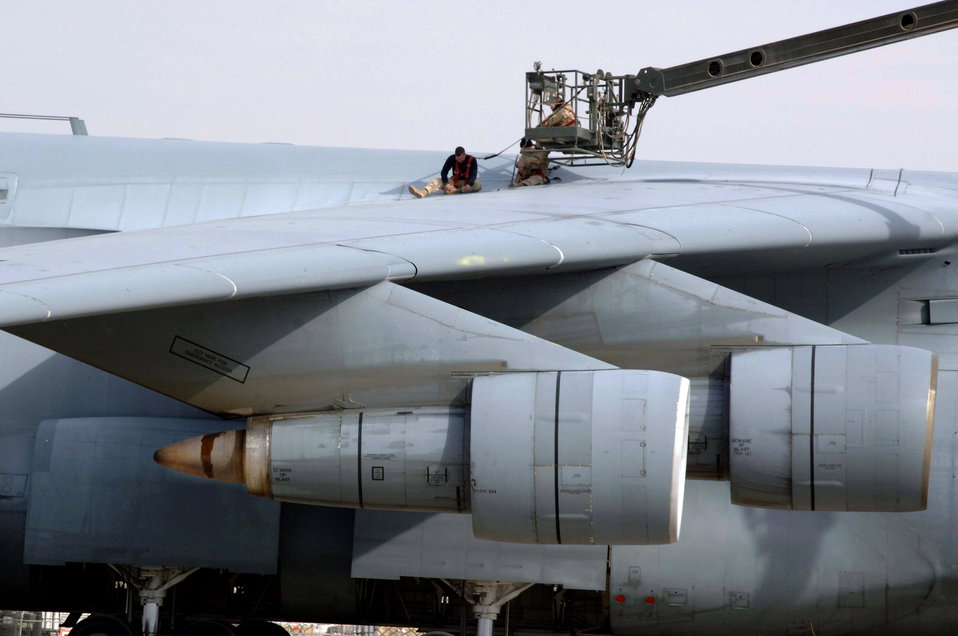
Time to get to work

Maintainers with the 721st Air Mobility Operations Group at Balad Air Base, Iraq, remove the panels on a C-5 Galaxy to perform maintenance. The Airmen are deployed from Travis Air Force Base, Calif.